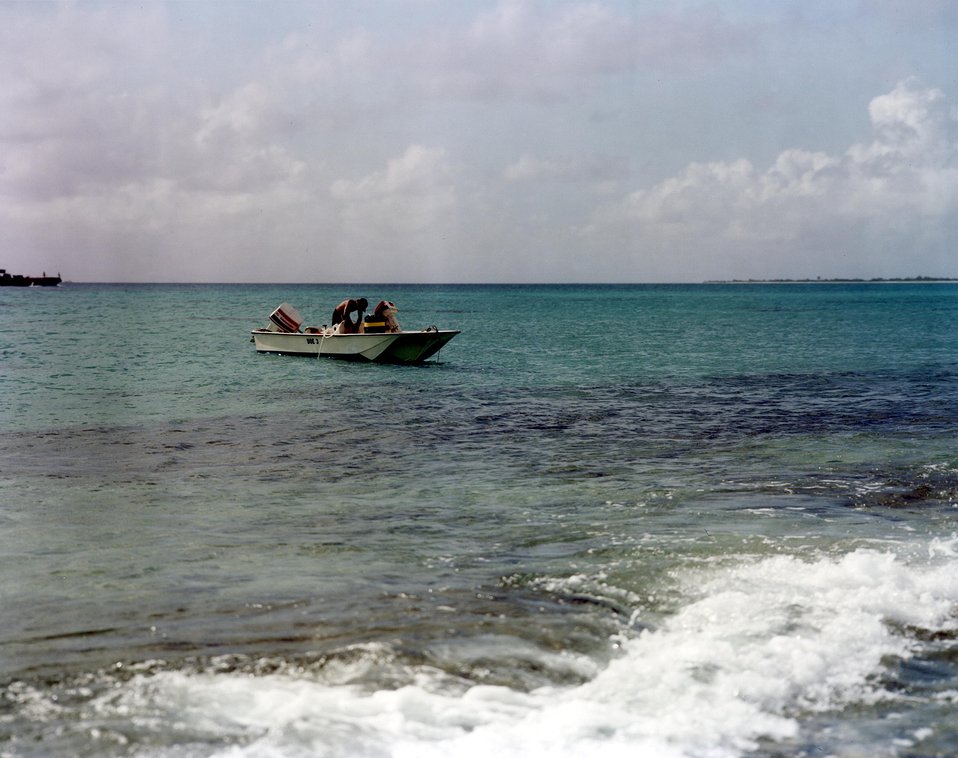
Construction activities at the Joseph M. Farley Power Plant.